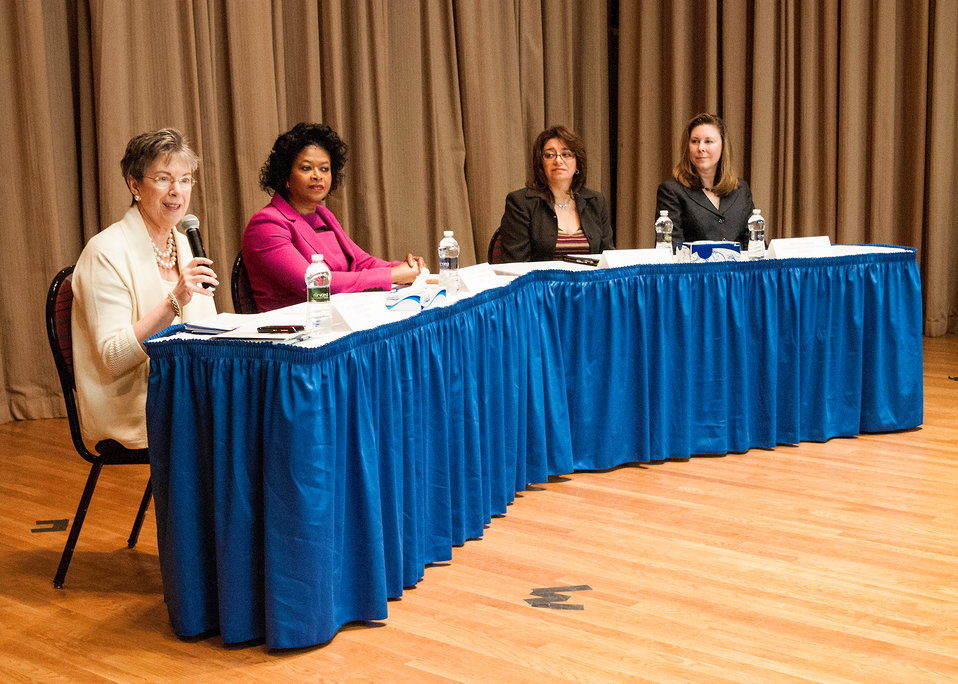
(L to R) Agriculture Under Secretary, Research, Education and Economics (REE) Dr. Katherine Wotecki, U.S. Department of Agriculture (USDA) Associate Chief Information Officer (Technology) Ms. Yvonne Jackson, USDA Rural Development (RD) Rural Utilities Service (Engineering) Assistant Administrator Ms. Nivin Elgohary, and USDA Associate Chief Financial Officer (Mathematics) Ms. Kim Farington chair a panel during the USDA ‘s Office of the Chief Information Officer (OCIO) National Women’s History Month celebration at the USDA Jefferson Auditorium in Washington, D.C. on Thursday, Mar. 14, 2013. The theme of this year’s celebration is, “Recognizing American Women’s Outstanding Contributions to the Field of Science, Technology, Engineering and Mathematics,” commonly referred to as STEM.